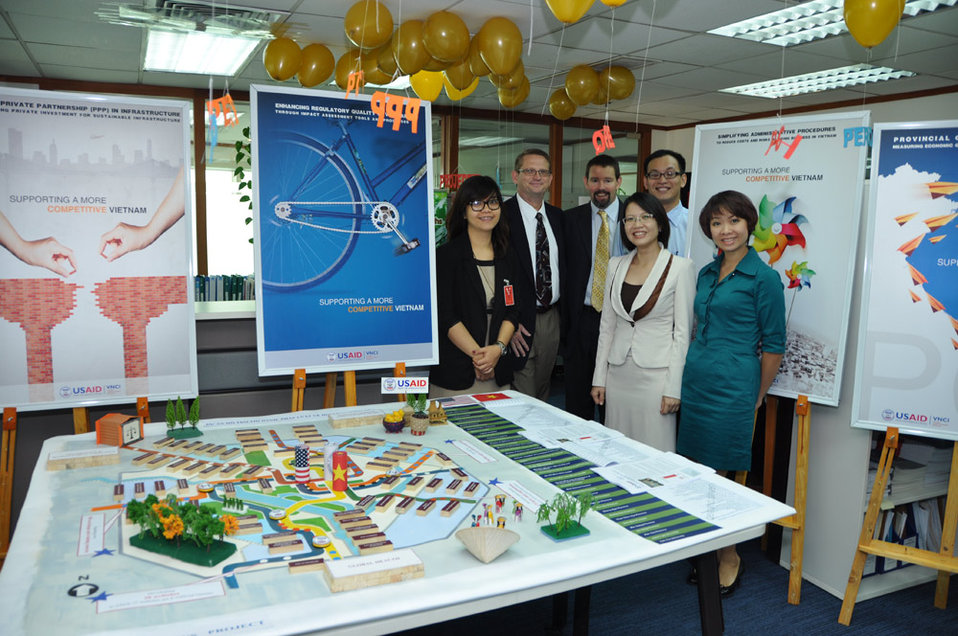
Display area at the USAID/Vietnam Open House on the occasion of USAID's 50th anniversary.